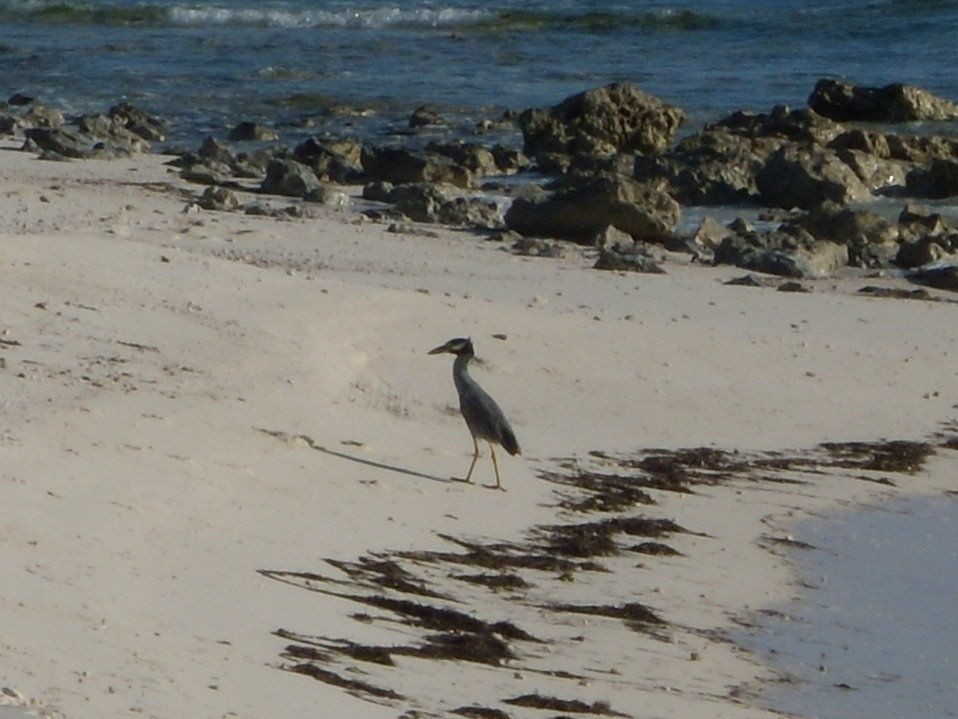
Yellow-crowned night heron foraging on Great Inagua Island.